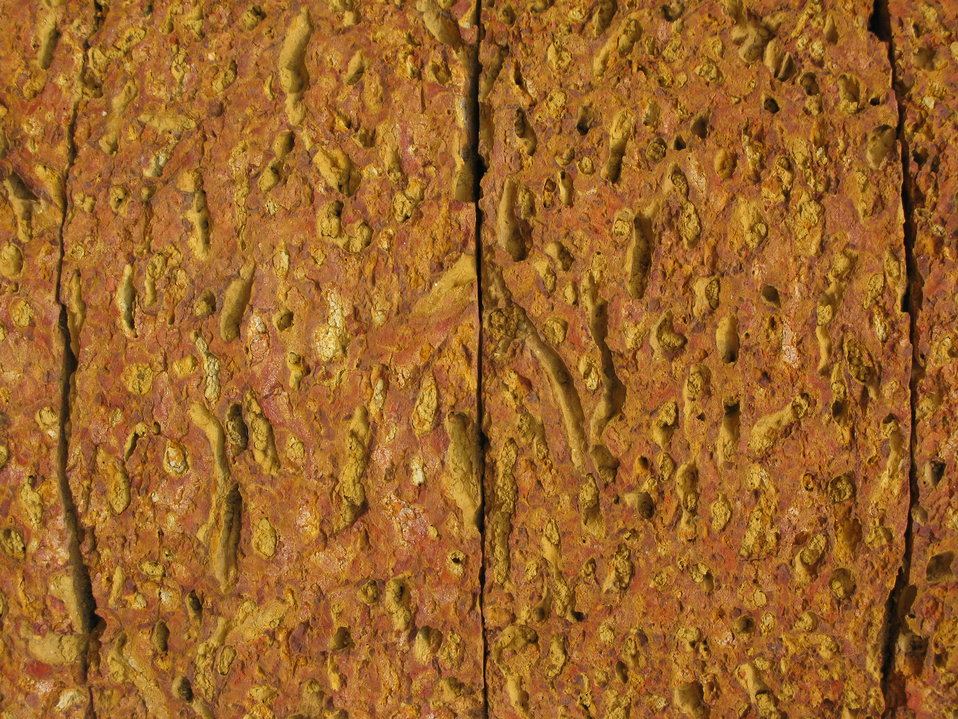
Laterite in Son Tay, Hanoi, Vietnam. Tiếng Việt: Đá ong Sơn Tây, Hà Nội.